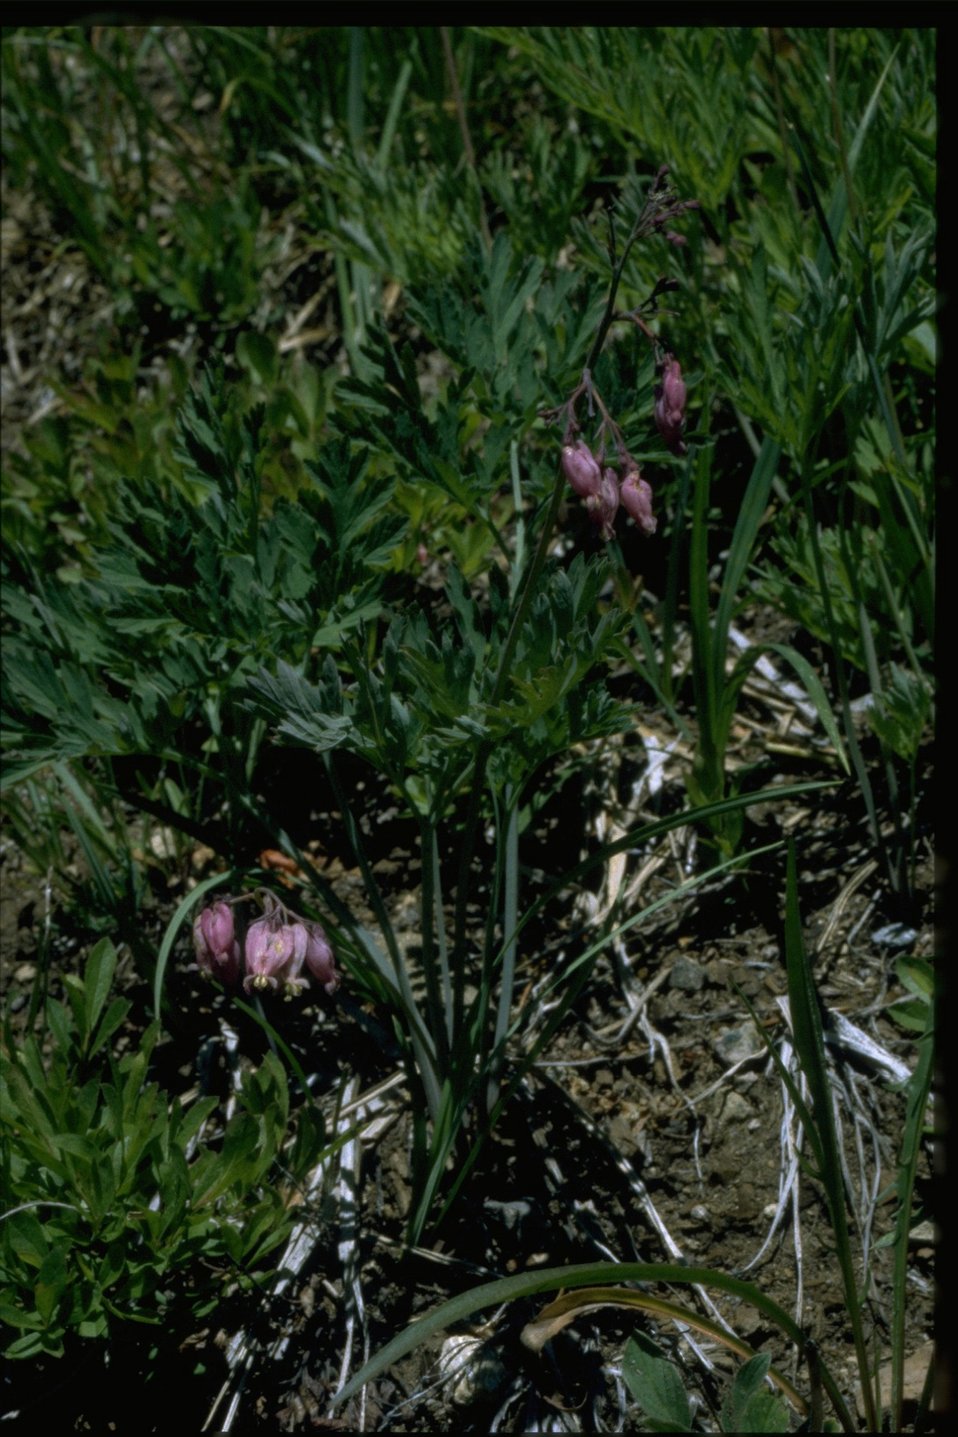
Medium shot of Dicentra formosa.